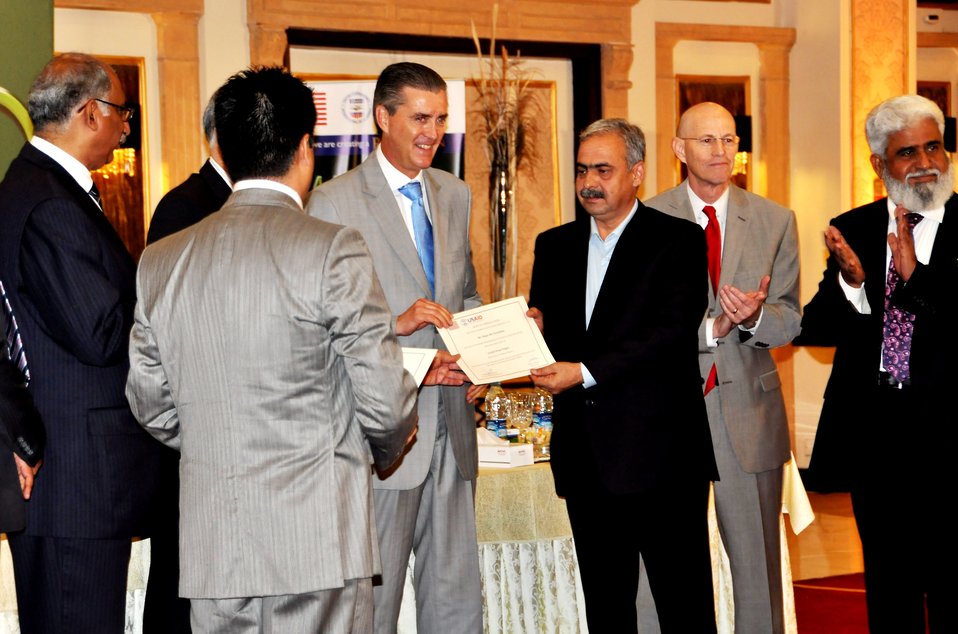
Mango Conference

Ambassador Olson and Commerce Secretary Qasim Niaz while distributing certificates to the project beneficiaries